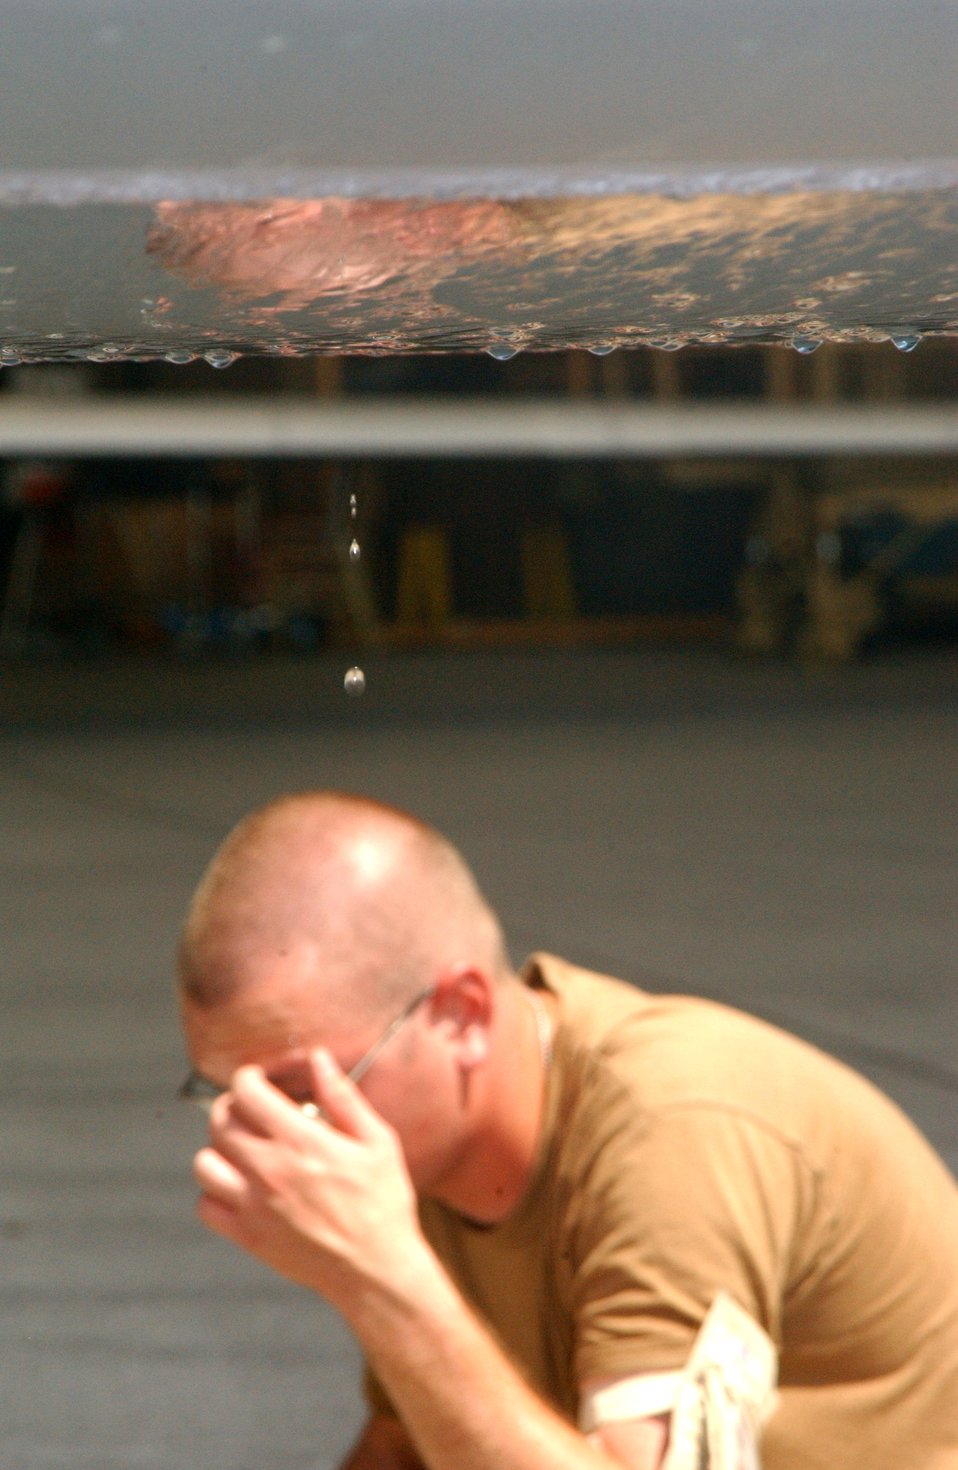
Global Hawk, global mission

Condensation drips from the wing of a Global Hawk as Airman 1st Class Samuel Carte wipes sweat from his brow, preparing to weigh the aircraft after a mission Oct. 3 at a deployed location in Southwest Asia. The weight check is one of many post-flight checks. The Global Hawk can survey large geographic areas with pinpoint accuracy to give military decision-makers the most current information about enemy location, resources and members.